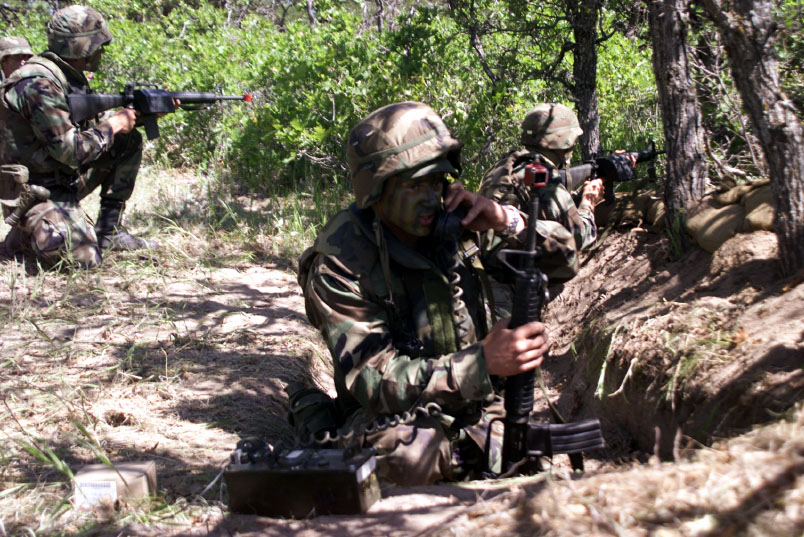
Reinforments needed

U.S. AIR FORCE ACADEMY, Colo. -- Cadet 3rd Class Kelsey Bryant of Cadet Squadron 27 calls for reinforcements from his perimeter security post after coming under repeated heavy attack from aggressor forces during the Air Force Academy's Global Engagement student exercise here.